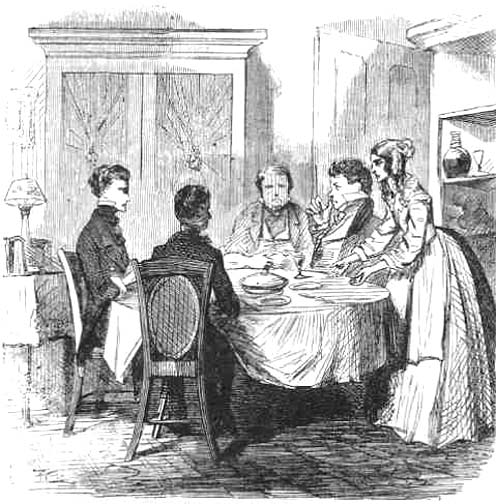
Great Expectations, Jaggers asking Molly to show her scarred wrists, by John McLenan Français : Les Grandes Espérances, Jaggers demande à Molly de montrer ses poignets marqués par des cicatrices, par John McLenan